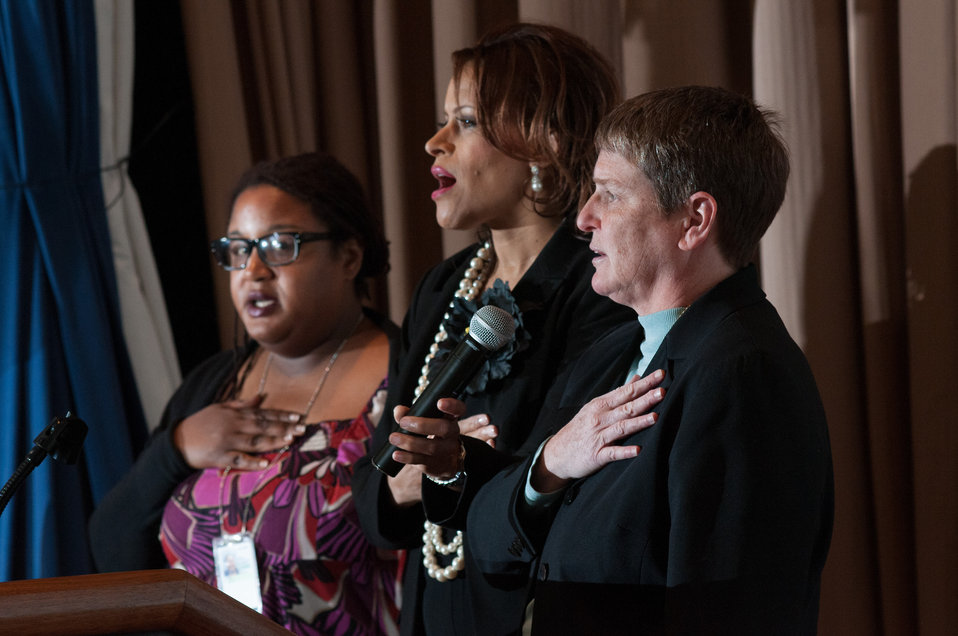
U.S. Department of Agriculture (USDA) Deputy Assistant Secretary for Administration Robin Heard, right, leads the Pledge of Allegiance during the 2013 Women’s History Month Observance in the Jefferson Auditorium with an event themed “Women Inspiring Innovation Through Imagination: Celebrating Women in Science, Technology, Engineering, and Mathematics, on Thursday March 21, 2013, in Washington, D.C.